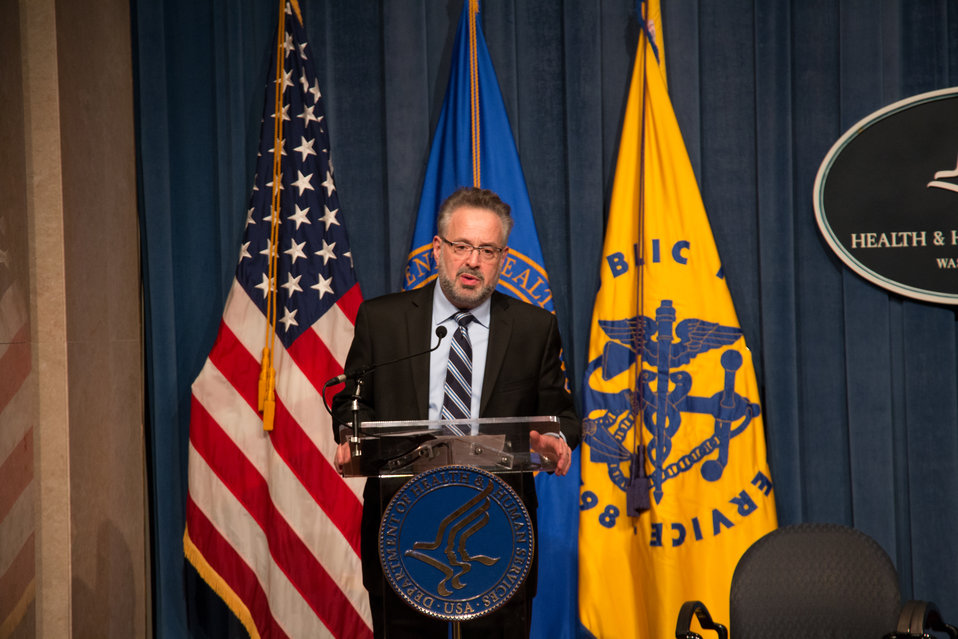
VHAP Launch (212 of 511)